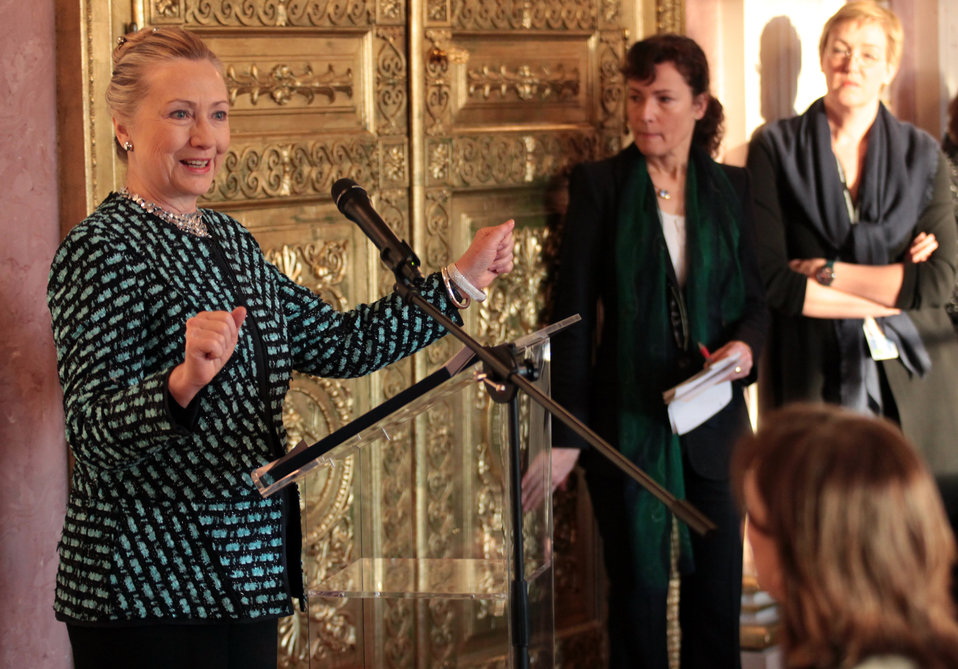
Secretary Clinton Delivers Remarks at a Breakfast

U.S. Secretary of State Hillary Rodham Clinton speaks at a breakfast sponsored by Women in International Security Deutschland (WIIS.de) and the Hanns-Seidel Foundation, at the Prinz Carl Palais in Munich, Germany, on February 5, 2012.